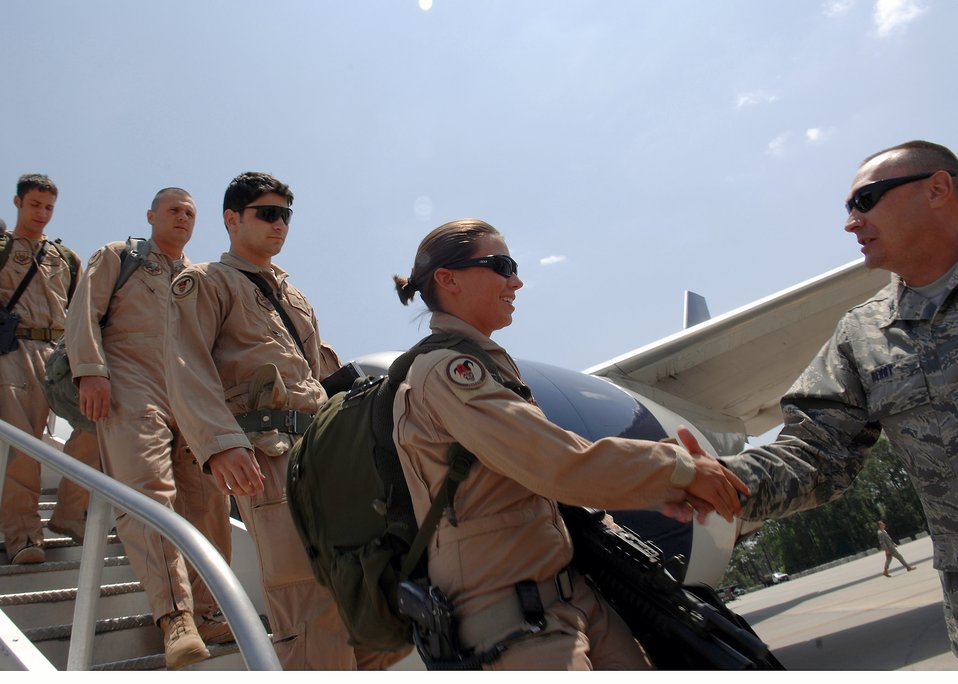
Welcome home!

Col. Donald Derry shakes the hand of an Airman from the 823rd Security Forces Squadron as she steps off of a plane April 29 at Moody Air Force Base, Ga. Colonel Derry welcomed home members of the 823rd SFS who returned from a six-month deployment to Camp Bucca, Iraq. Colonel Derry is the 820th Security Forces Group commander.